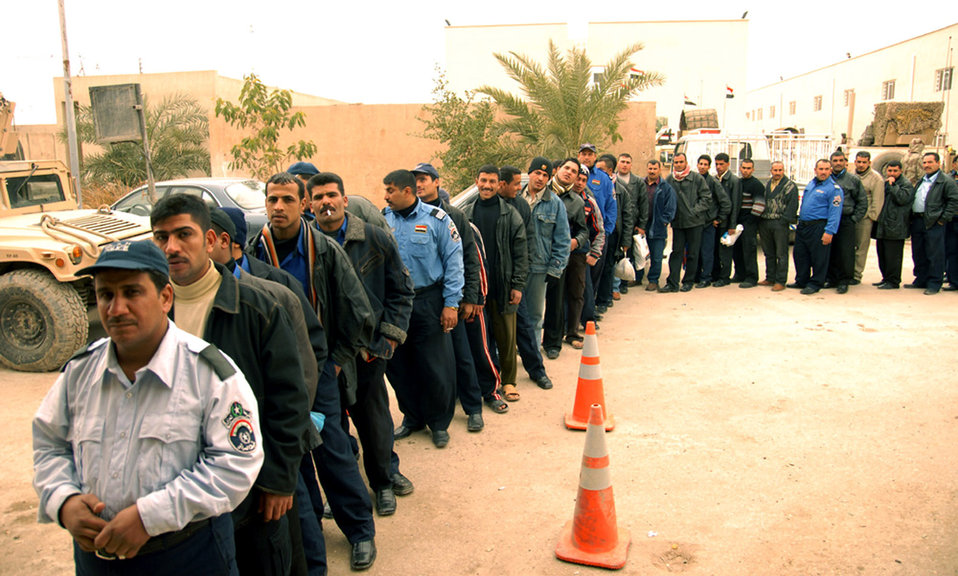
Coalition Forces assist in Iraqi police pay day

Hy al Amil Iraqi police officers wait in line Jan. 30 at the Joint Security Station Black Lion in Baghdad, Iraq, to receive their monthly pay. One hundred ninety-three officers went through a security search for verification and identification prior to being paid. U.S. expeditionary security forces members helped with the process for the third month in a row.